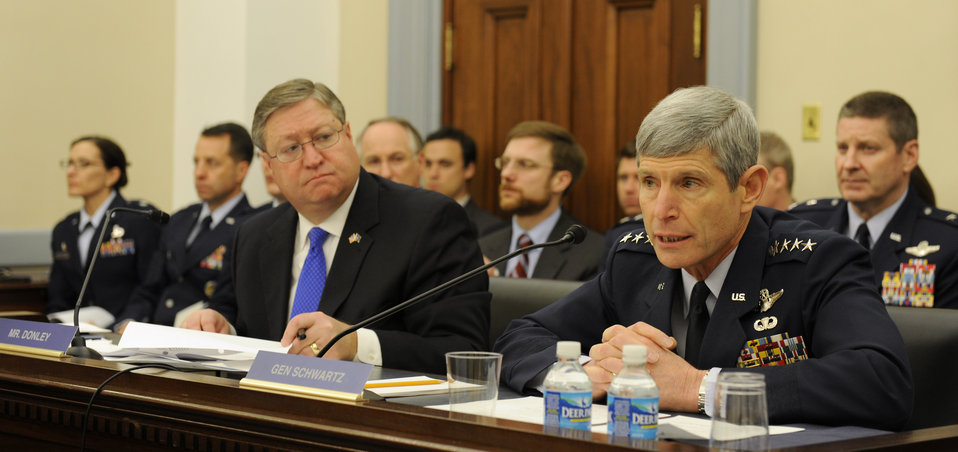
HAC-D Testimony

Air Force Chief of Staff Gen. Norton Schwartz provides his opening statement to the House Appropriations Subcommittee on Defense March 10, 2010, at the U.S. Capitol, with Secretary of the Air Force Michael Donley. The hearing allowed Secretary Donley and General Schwartz the opportunity to outline the Air Force's FY2011 budget request and to address questions raised by committee members. Topics included service core functions such as nuclear deterrence, air and space superiority, cyberspace, global precision attack and rapid global mobility.